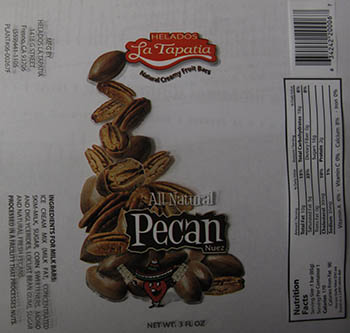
RECALLED – Ice cream products

March 19, 2014 – Product Recall – Helados La Tapatia, Inc. Recalls Products Because of Possible Health Risk.